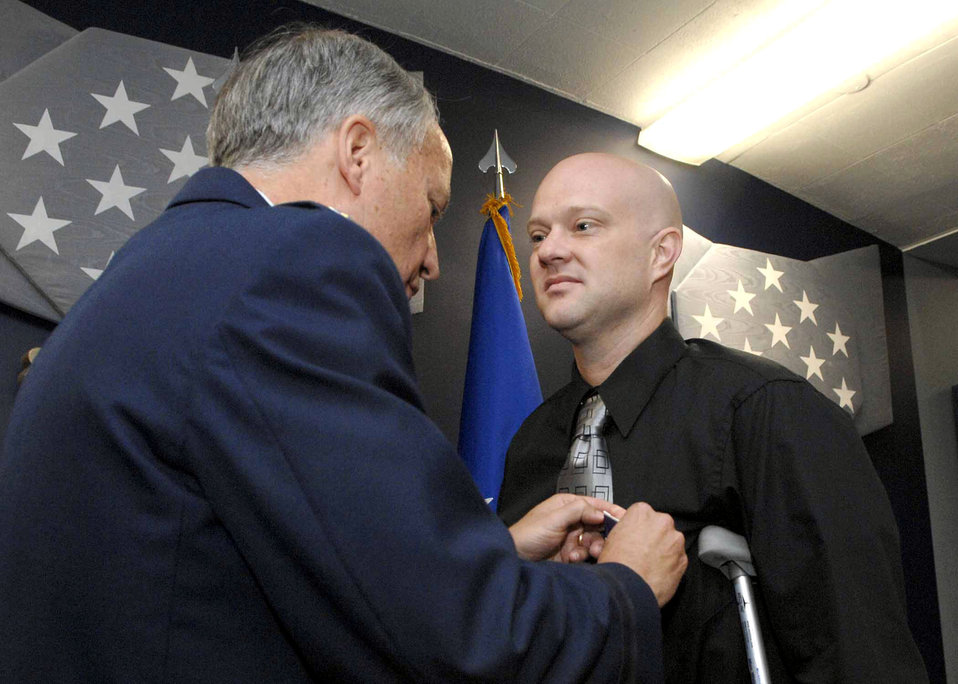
Air Force broadcaster receives Purple Heart

Lt. Gen. Frank G. Klotz, assistant vice chief of staff of the Air Force, presents Tech. Sgt. Jeremie L. Brown with the Purple Heart during a ceremony Sept. 17 at the Pentagon. Sergeant Brown received the medal for injuries he sustained during a mortar attack while on assignment as a broadcaster in Iraq.